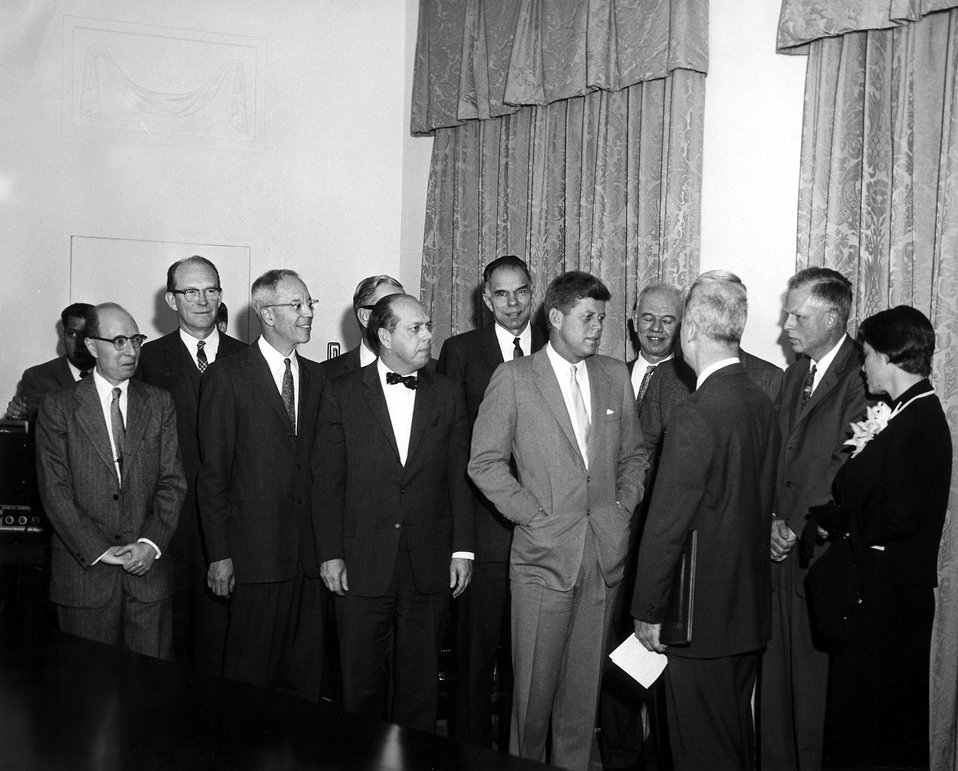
Hans Rothe, 1961.